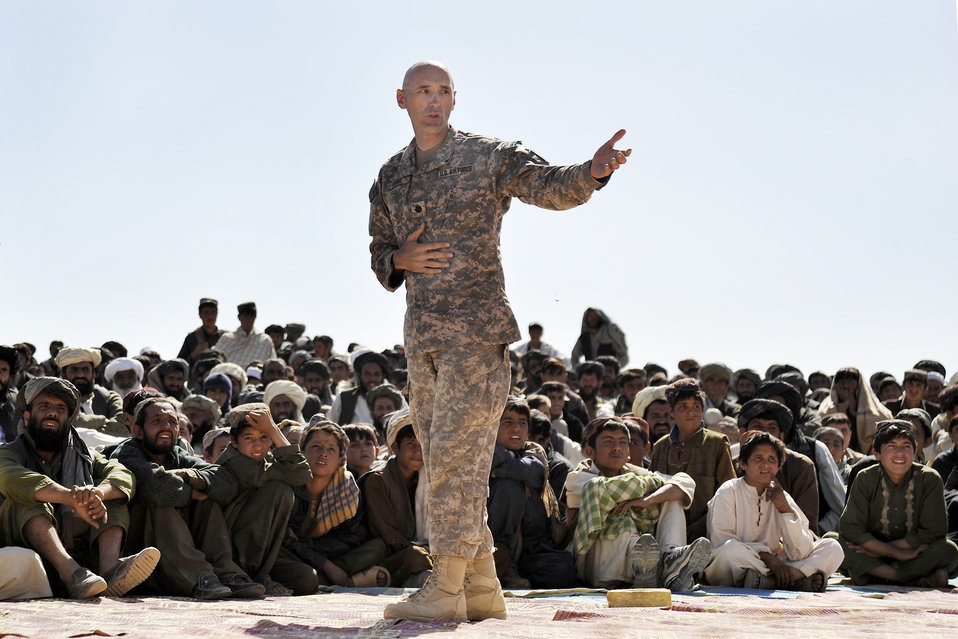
American servicemembers breaks ground on girl's high school in Afghanistan

Lt. Col. Andy Veres speaks at the ground-breaking ceremony of the first all girl's high school in the province Oct. 22, 2009, at Shajoy, Afghanistan. Colonel Veres is the commander of the Zabul Provincial Reconstruction Team.